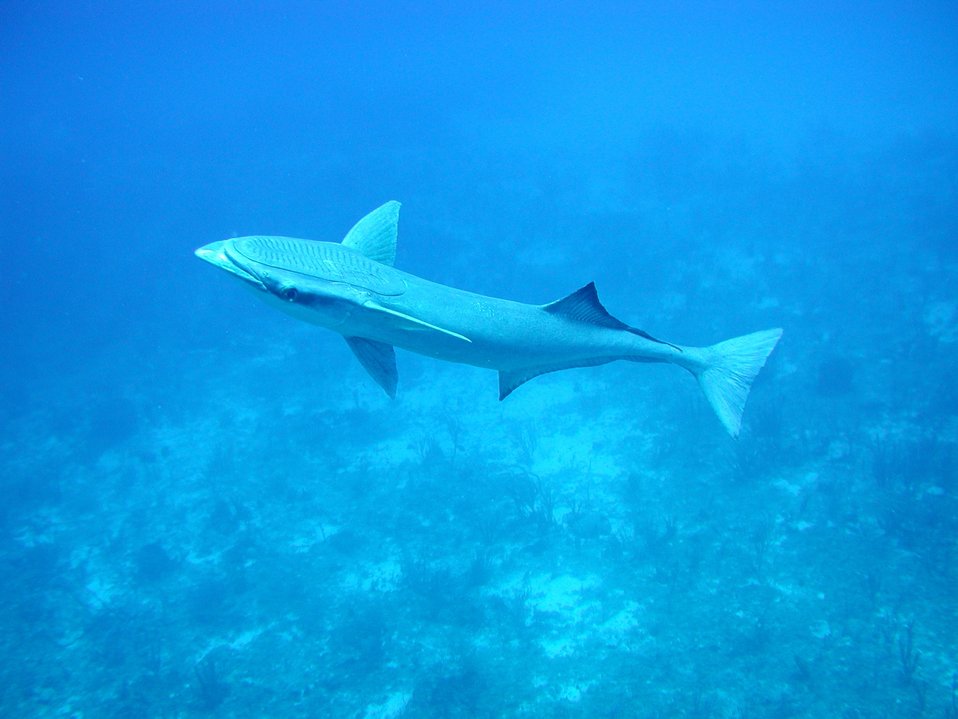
Sharksucker (Echeneis naucrates)